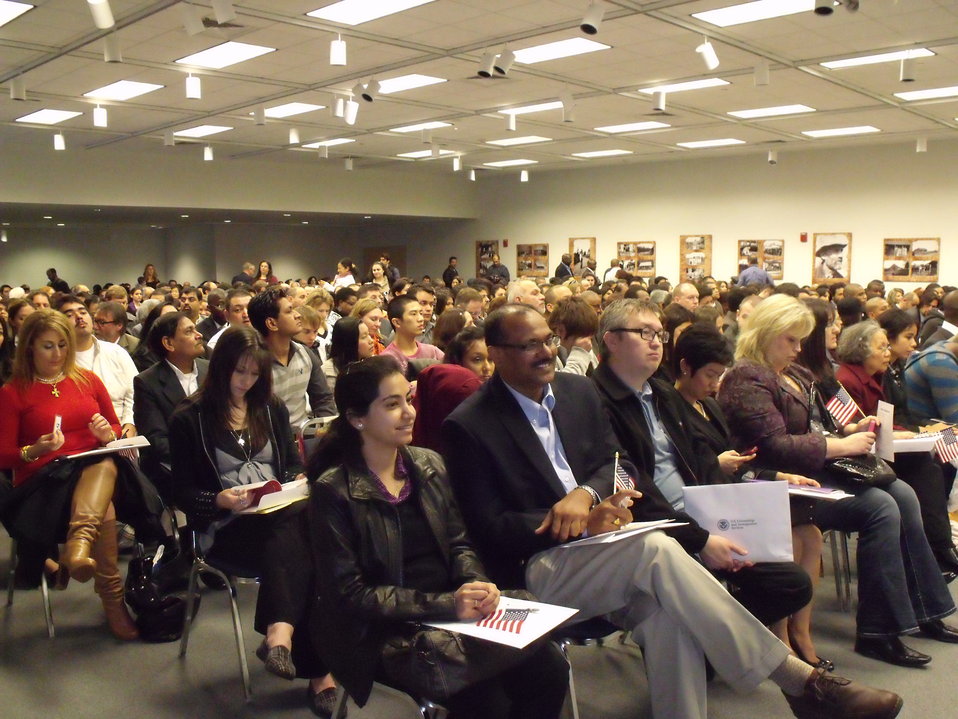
Naturalization Ceremony